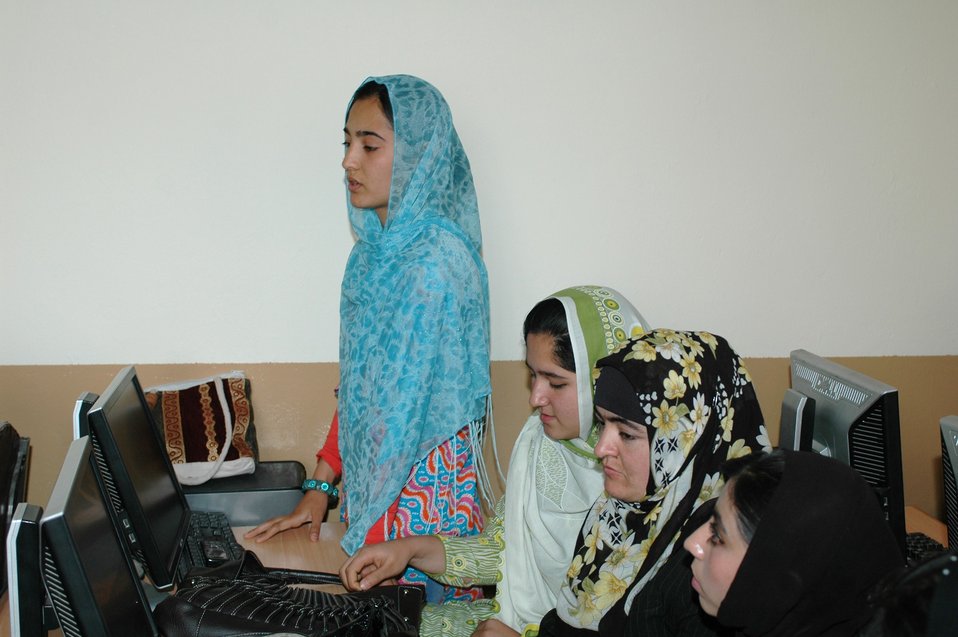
Dr Shah Visits Votech in Kabul